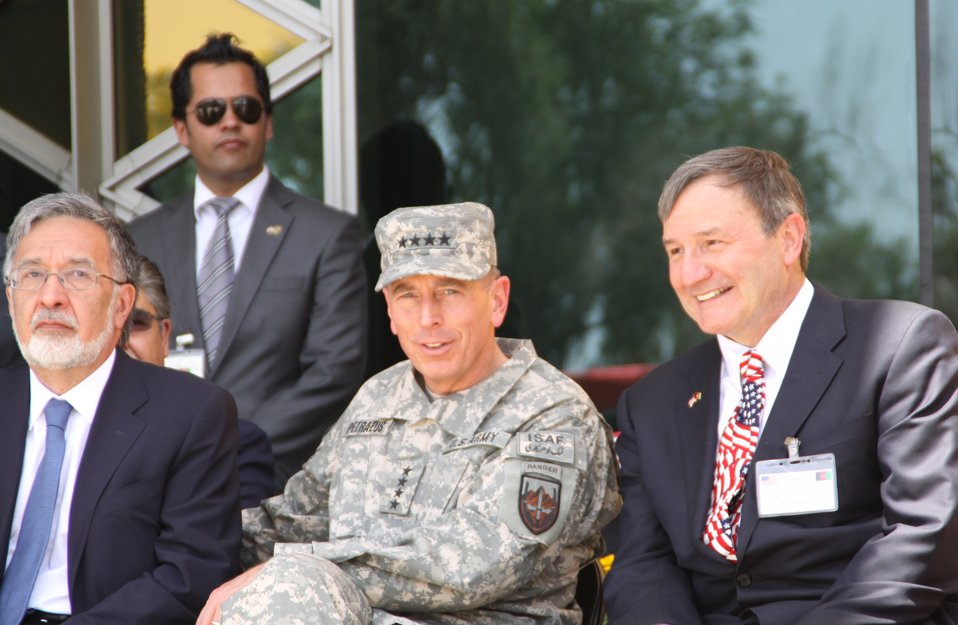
Kabul Official July 4th Celebration